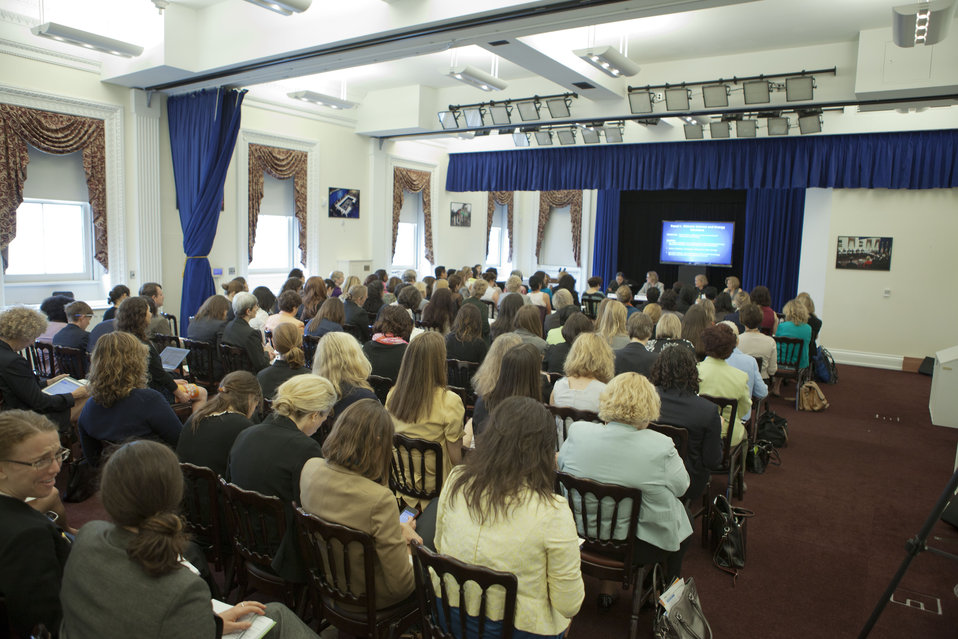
White House Leadership Summit on Women, Climate and Energy

Throughout the day, about 100 of the top women in climate and energy gathered for panel discussions and break out sessions.